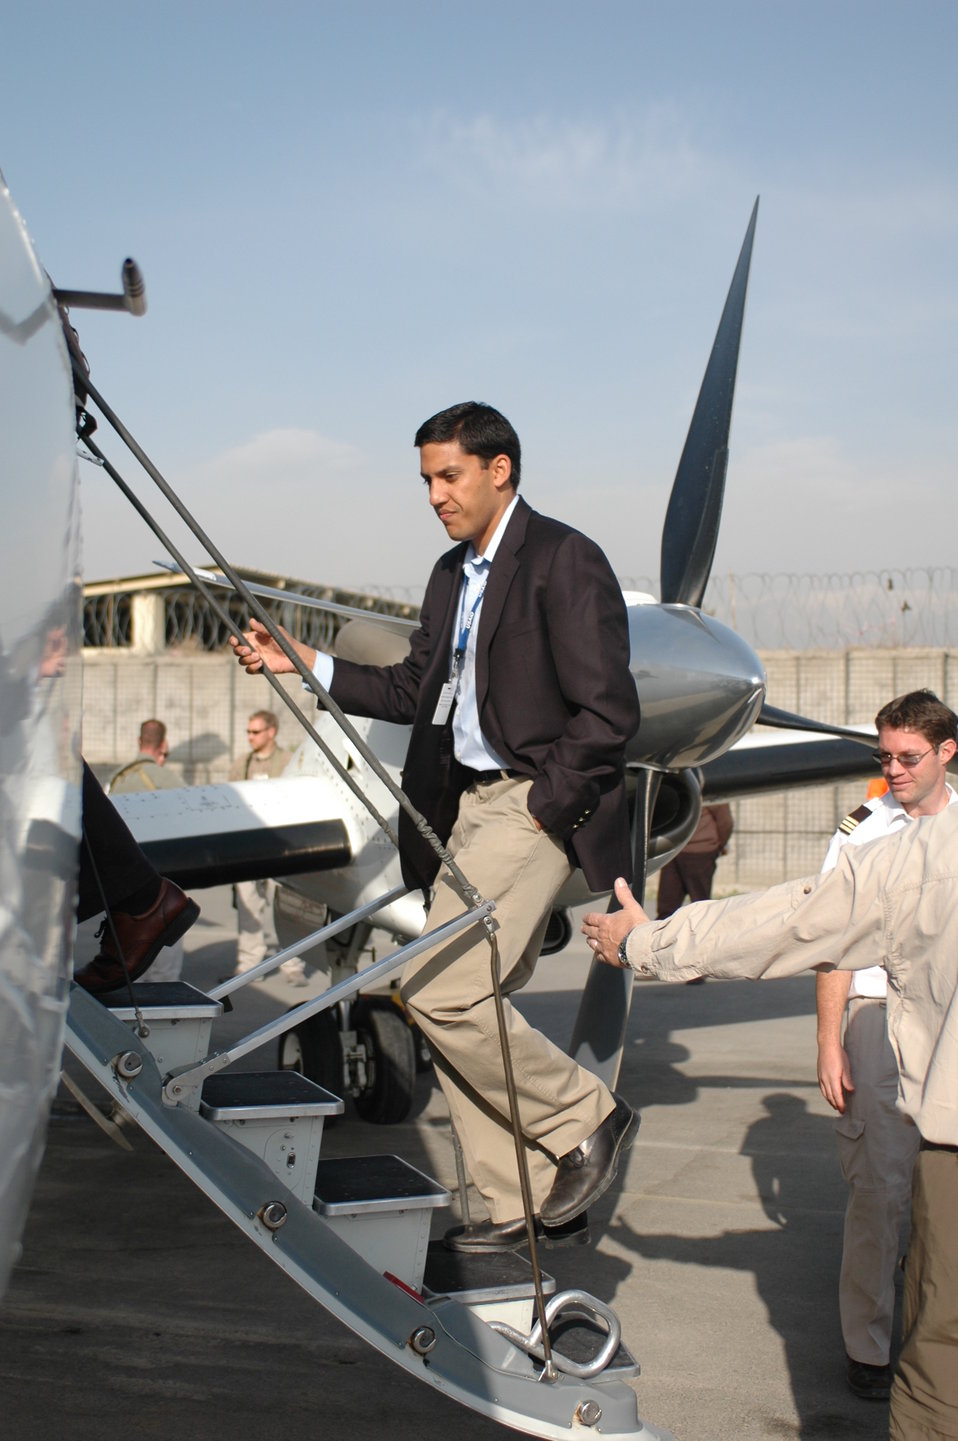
Dr Shah Visits Argandab April 10, 2010